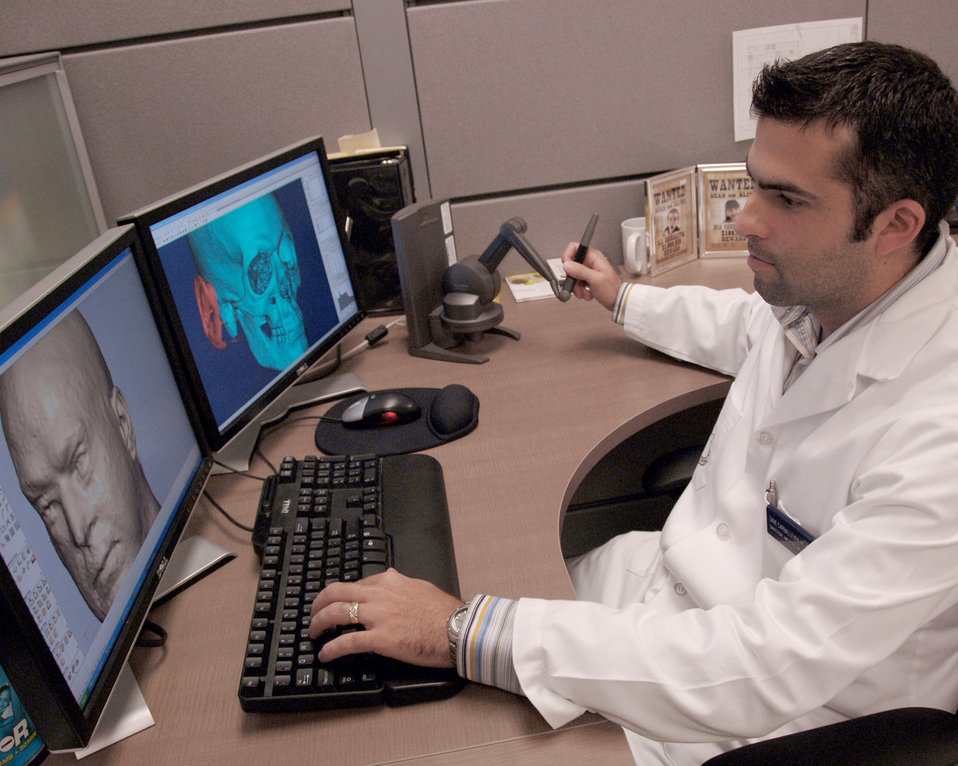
Technology creates facial prostheses for wounded warriors

Dave Carballeyra reviews Capt. Ryan Voltin's scans May 7, 2010, at MacKown Dental Clinic at Lackland Air Force Base, Texas. Stereolithography is a rapid prototyping method which allows the fabrication of anatomically-accurate, three-dimensional epoxy and acrylic resin models from various types of medical data. The technology helps build replacement ears and noses that will fit perfectly. Mr. Carballeyra is the stereolithography lab supervisor at the MacKown Dental Clinic.